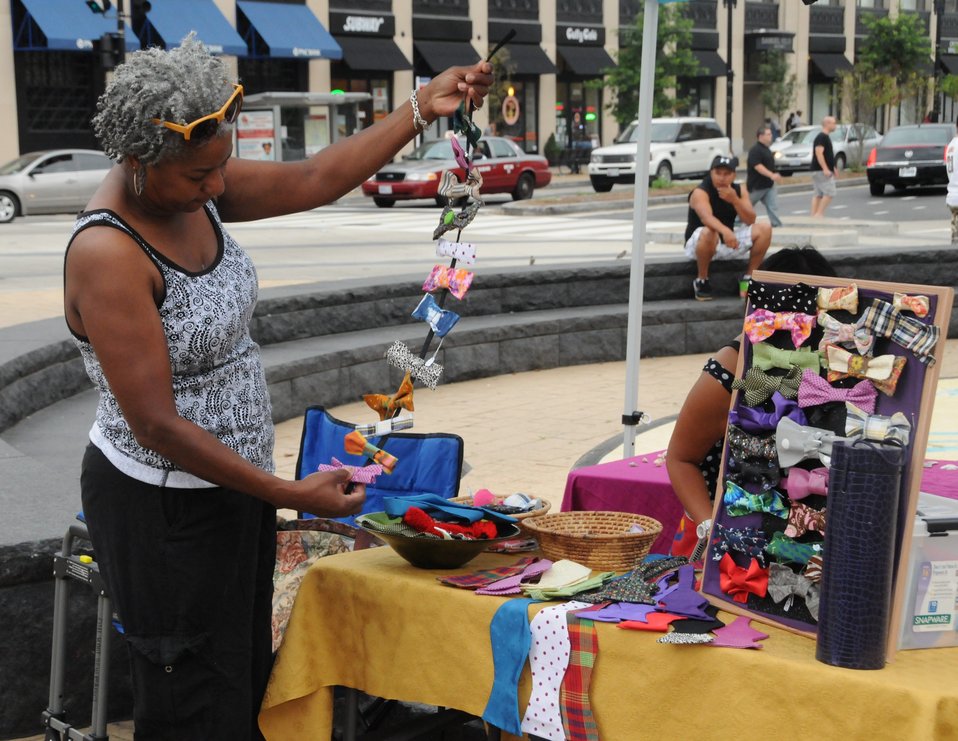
Craft Vendor

Vendors at the Columbia Heights Community Marketplace.